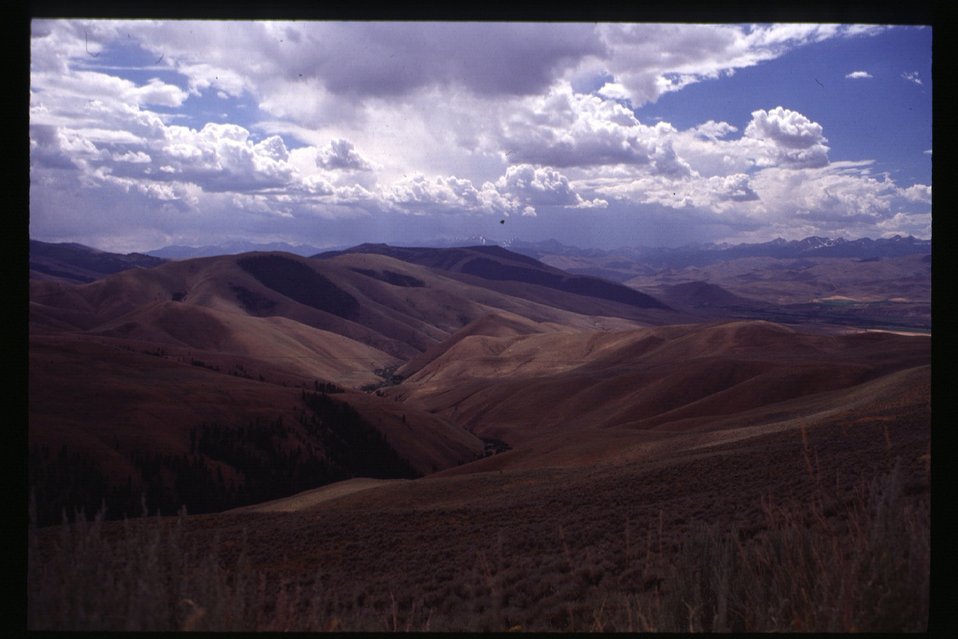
Lewis and Clark National Historic Trail Salmon Field Office UCSC Upper Columbia Salmon Clearwater